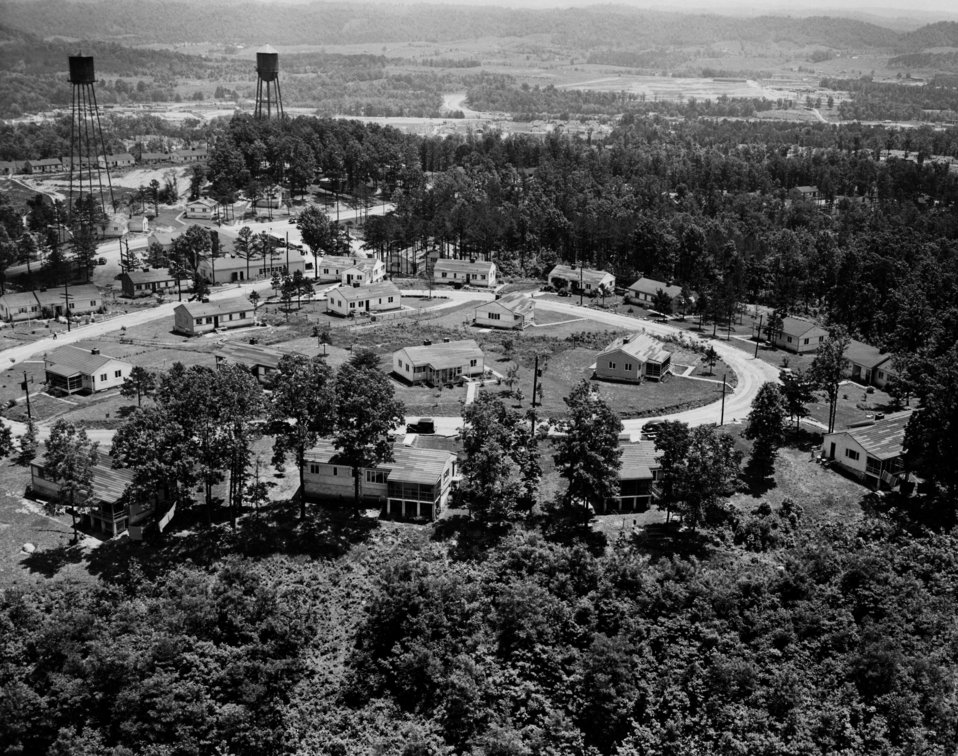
Oak Ridge Houses 1947

3555 DOE photo Ed Westcott 1947 Oak Ridge Tennessee